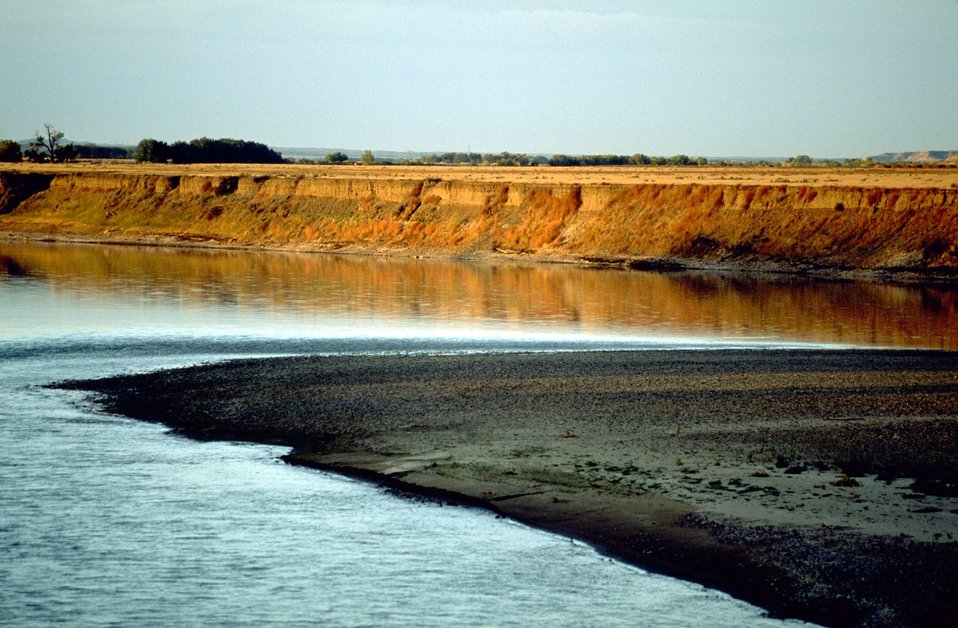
Sun shining on a Yellowstone River bank, reflecting in the water